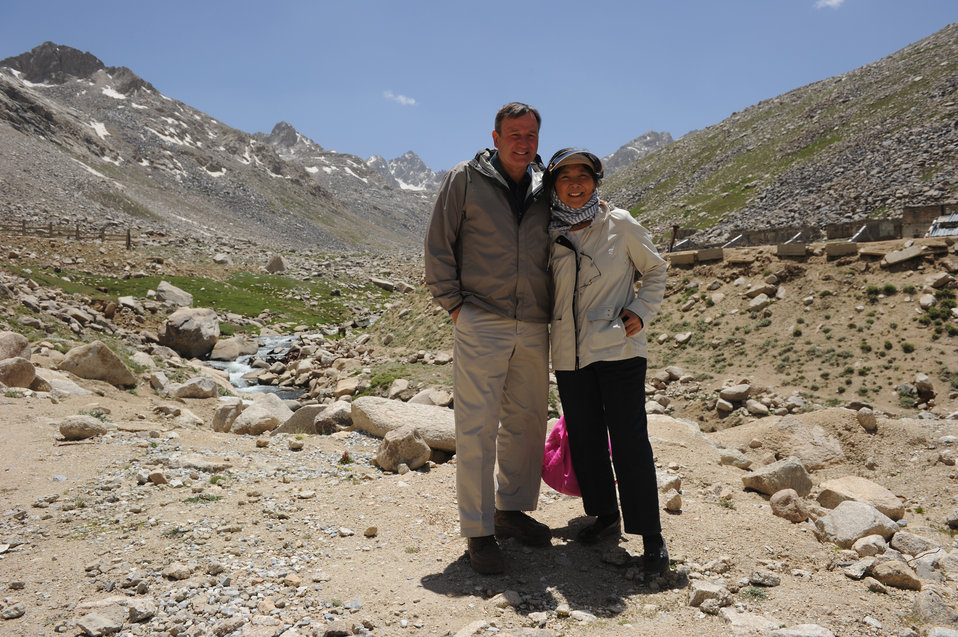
U.S. Ambassador Karl W. Eikenberry and his wife Ching pose near the North end of the Salang Tunnel on the border of Parwan and Baghlan Provinces, Afghanistan, on Wednesday, June 15, 2011. (S.K.Vemmer/Department of State)